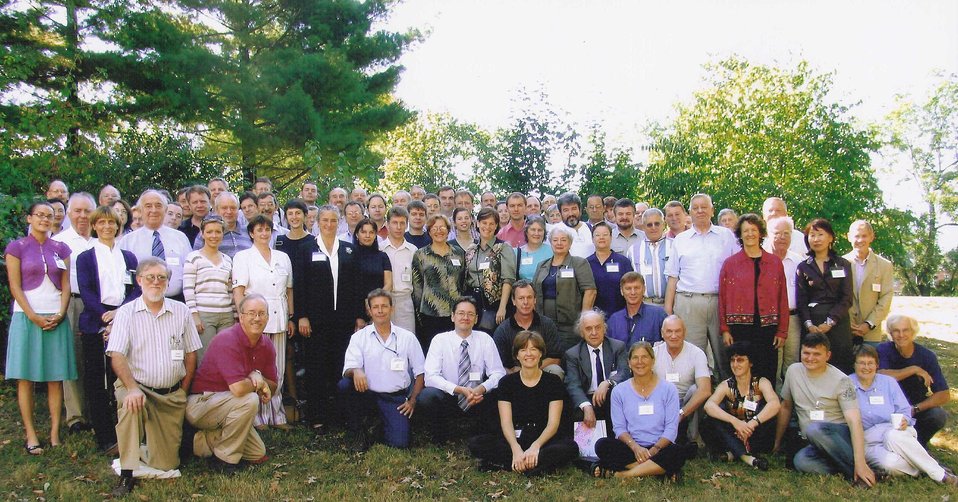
Botany Conference US Russia 2005

U.S.-Russia Botany Conference, Chambersburg, Pennsylvania, 2005.